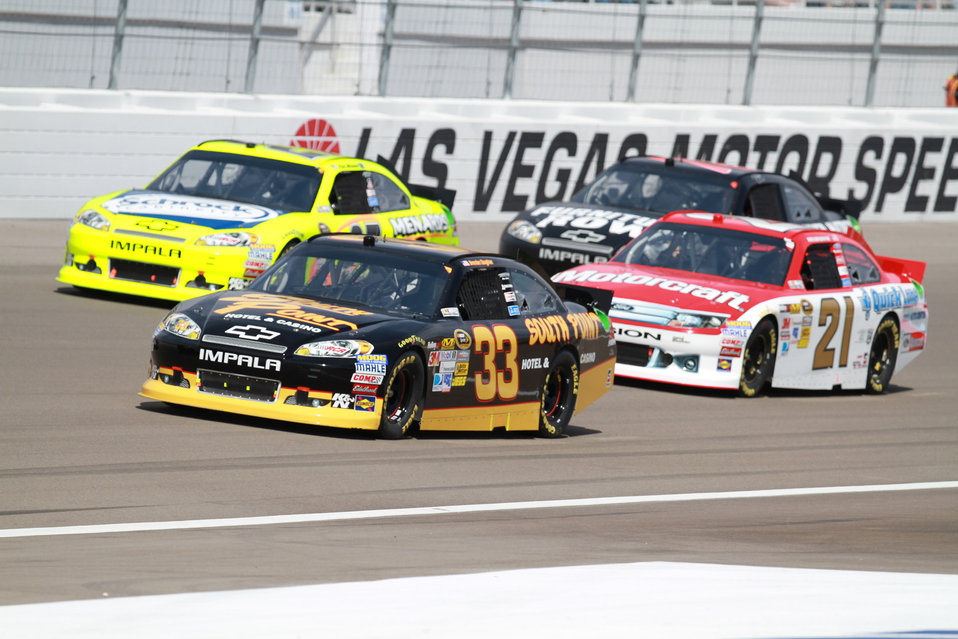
Nascar las vegas motor speedway 2012.